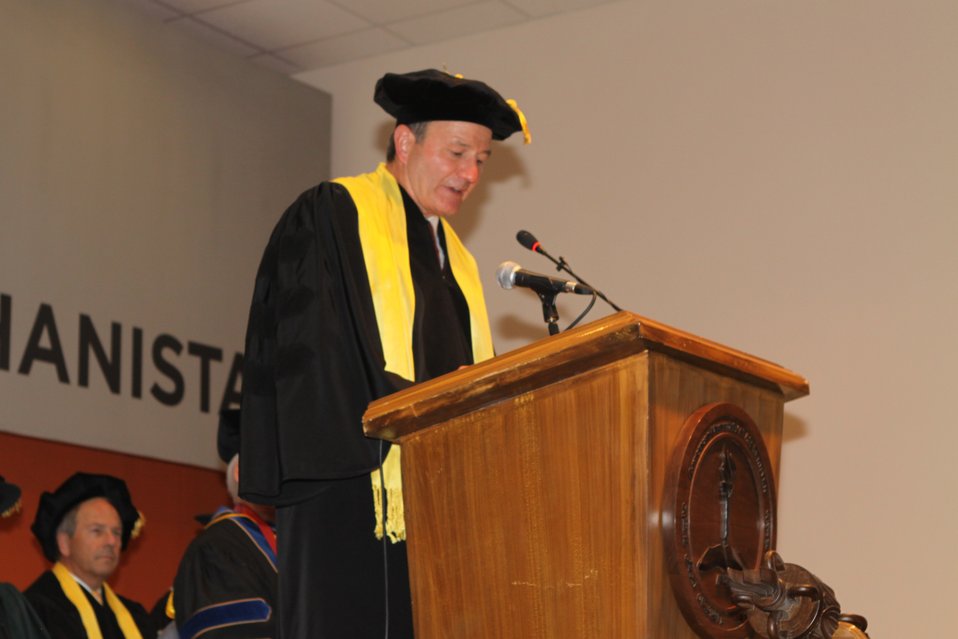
100526 AUAF Graduation 221